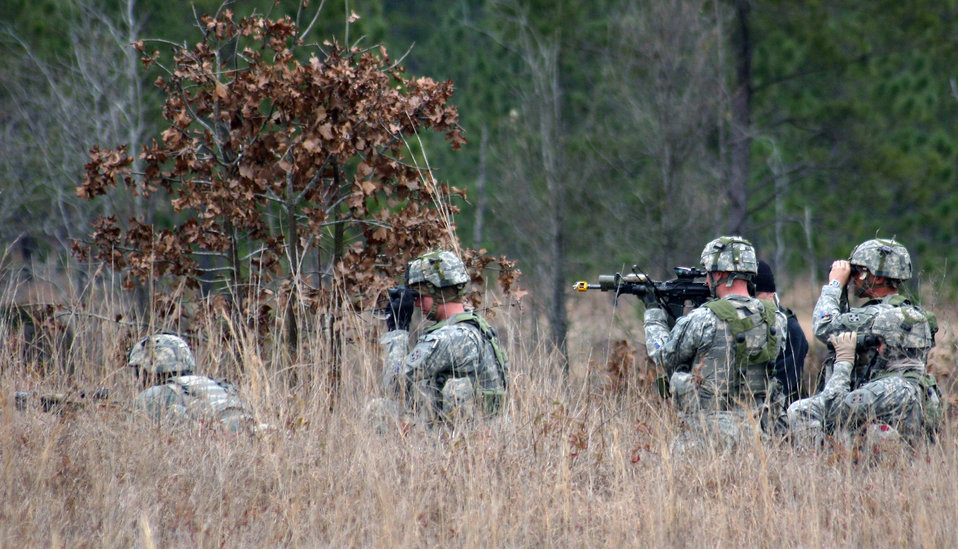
American, British forces hone warfighting skills together

Army joint fires observers search for potential targets at the Joint Readiness Center in Fort Polk, La.